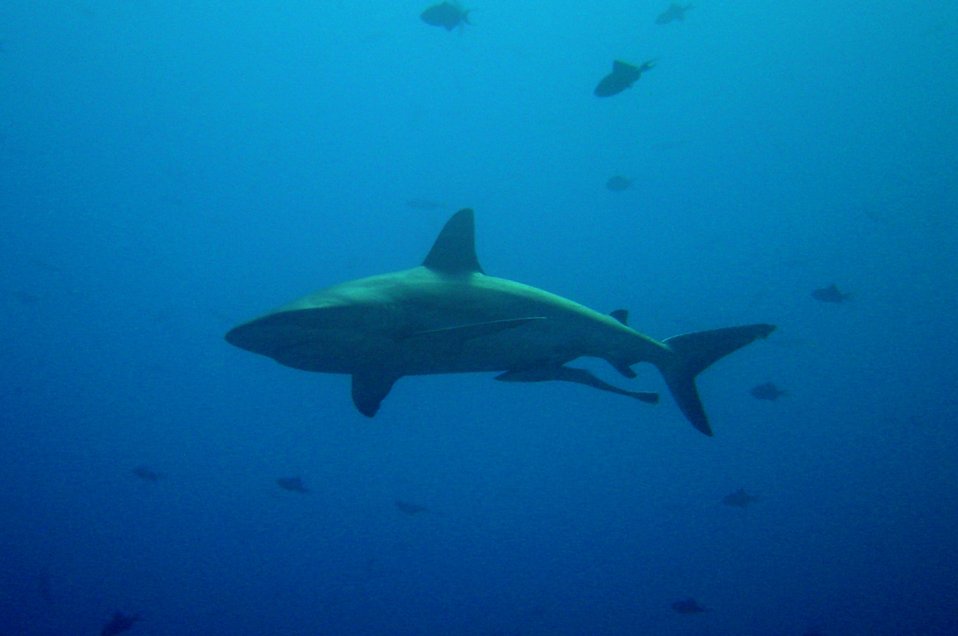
Large shark (Carcharinus sp.) with remora swimming below.